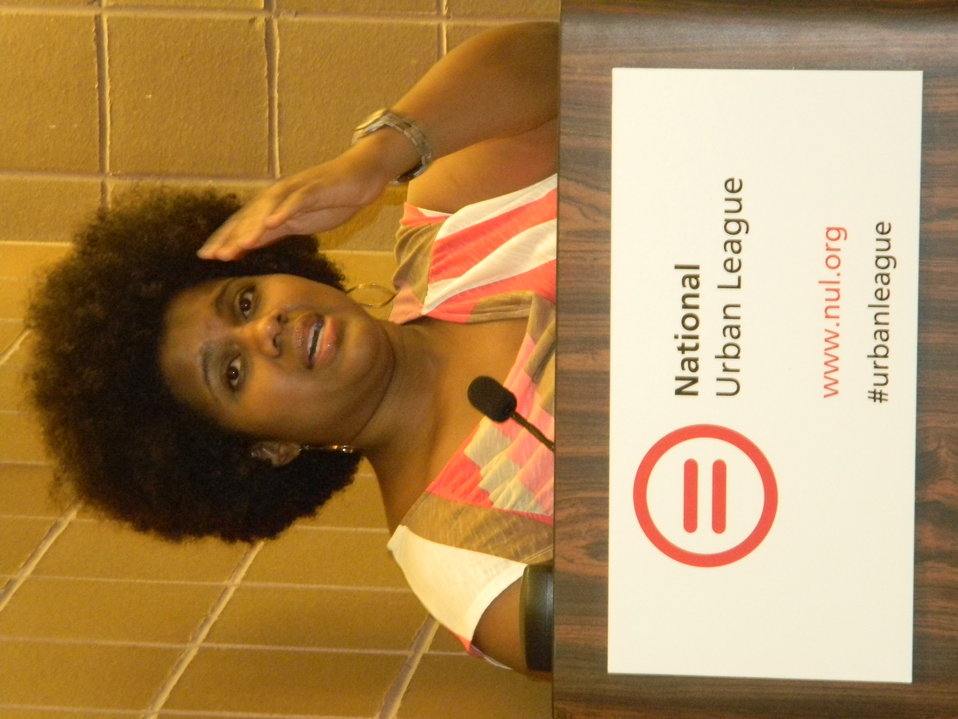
2012 National Urban League Conference

Kristal High, moderator of the Job Creation and Education: Programmatic Efforts to Increase Broadband Adoption in African American Communities panel.